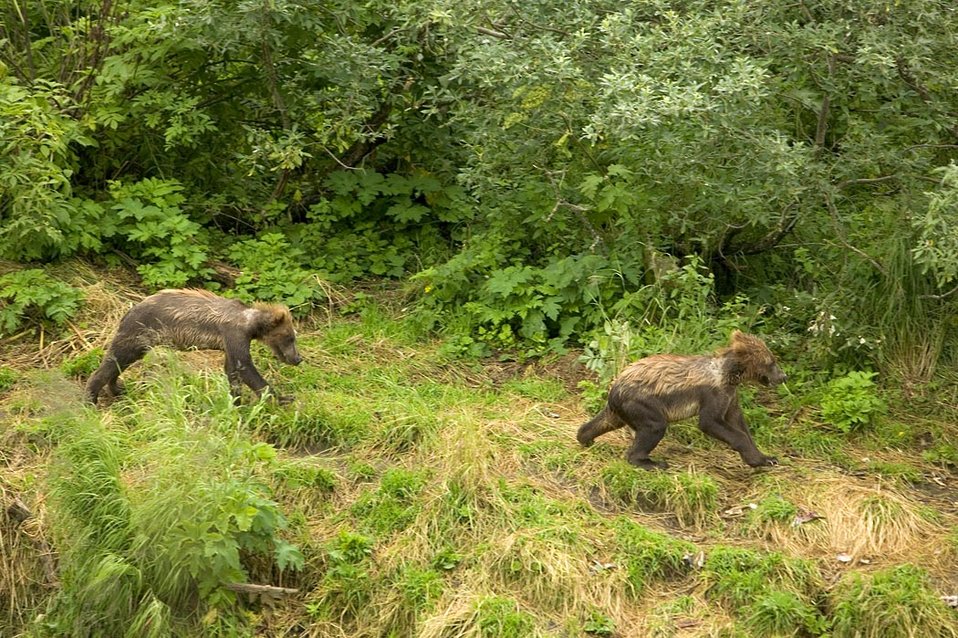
Brown bear cubs

Two grizzly bear cubs